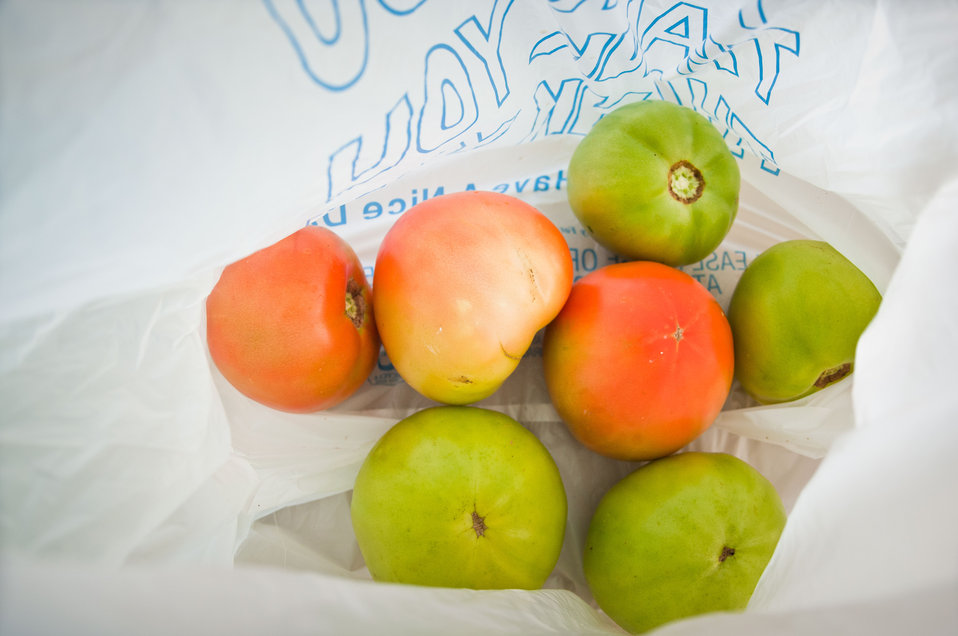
One customer's purchase of tomato's at the Bath County Agricultural Education and Marketing Center, Owingsville, KY, on Friday, July 15, 2011. The Center was the recipient of a $400,000 Rural Business Enterprise Grant. It has given farmers and producers from Bath and surrounding counties the opportunity to manufacture and market their locally grown and locally produced value-added and “Kentucky Proud” branded products, including but not limited to, fresh produce, artisan crafts and specialty food products. The Center is open year-round and allow residents to sell products in four different retail categories, including Kentucky products, regional crafts, “green” groceries and bakery/deli. Several producers expressed their gratitude for Rural Development’s assistance in making the center a reality. The project was made possible through funding the American Recovery and Reinvestment Act of 2009 enacted by the 111th United States Congress in February 2009 and signed into law on February 17, 2009, by President Barack Obama.